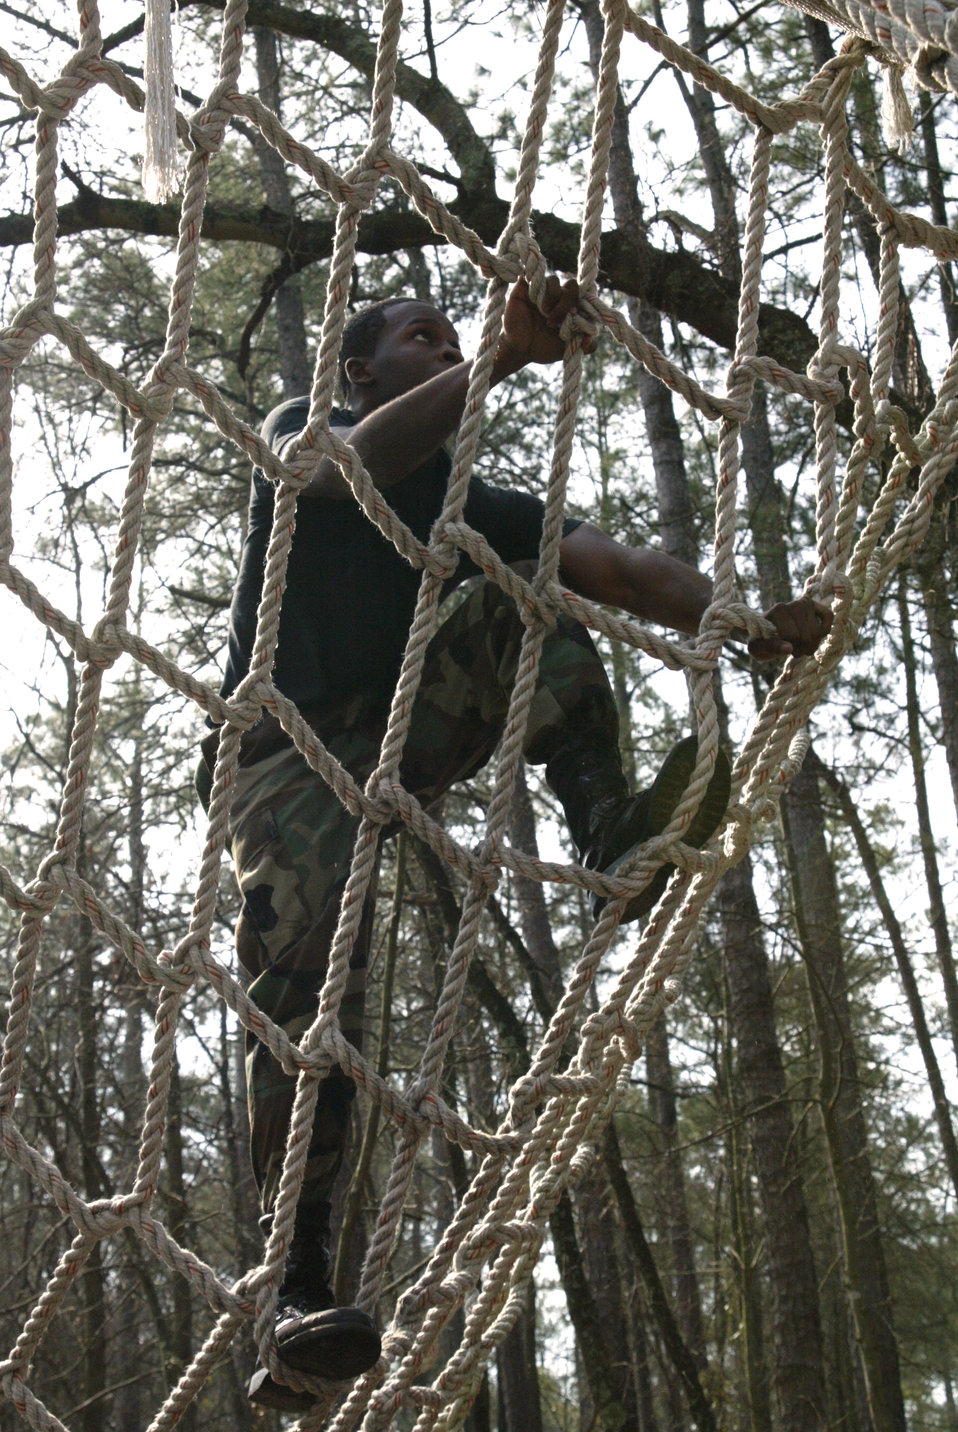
Competition aids Air Force Assistance Fund

POPE AIR FORCE BASE, N.C. -- Airman Nathaniel Hardaway scales the cargo net during an Air Force Assistance Fund competition here April 1. The competition, which raised $520 for the fund, included 26 teams from around the base. Airman Hardaway was part of the 43rd Medical Group team, which finished the course in 5 minutes, 16 seconds.